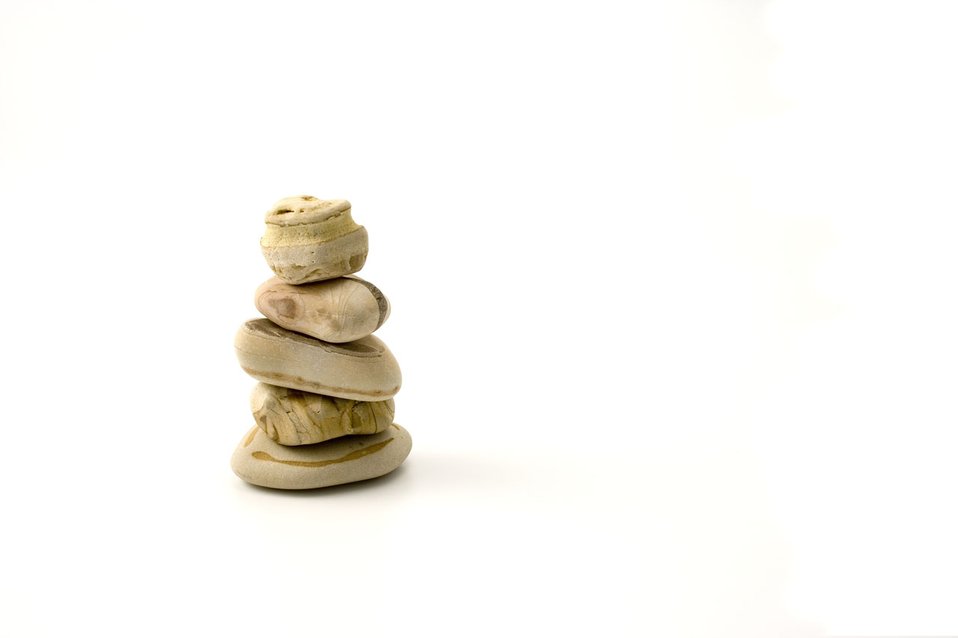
Balancing pebbles

Balancing sandstone pebbles.